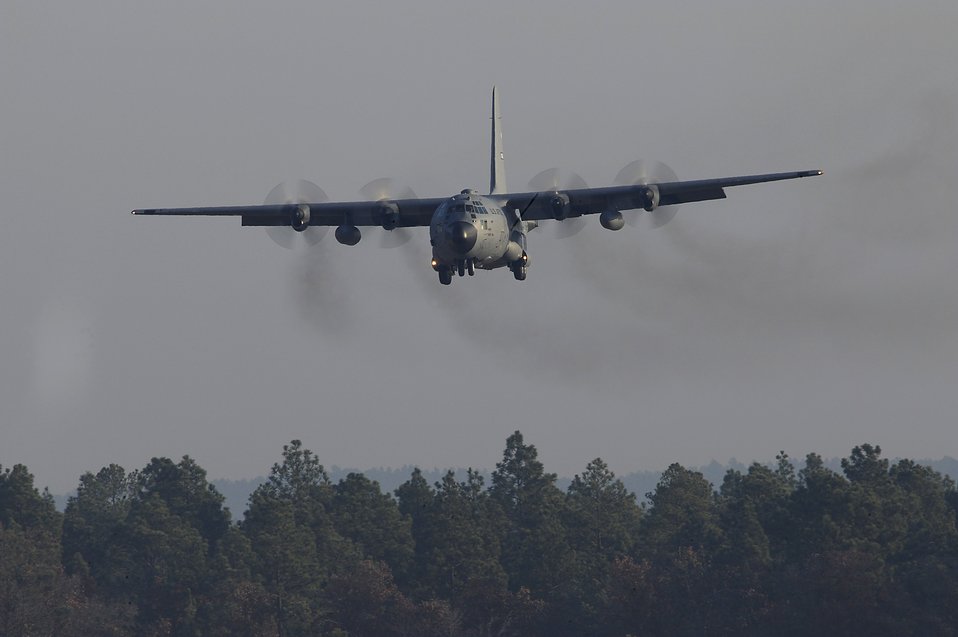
Operation Toy Drop

A C-130 Hercules from Pope Air Force Base, N.C., prepares to land at Drop Zone Sicily to pick up Army Soldiers from the 82nd Airborne Division at Fort Bragg, N.C., for a parachute jump Dec. 6 during Operation Toy Drop at Fort Bragg. Operation Toy Drop is an annual Airborne jump at Fort Bragg in its 11th year hosted by the Army Civil Affairs and Psychological Operations Command (Airborne), and supported by Fort Bragg's XVIII Airborne Corps and the Air Force Reserve Command's 440th Airlift Wing at Pope AFB that gives Soldiers and Airmen the opportunity to help local families in need over the holidays while boosting morale and incorporating valuable training. More than 3,000 Soldiers donated a toy for a lottery ticket and the chance to jump under a foreign jumpmaster, earning them their foreign jump wings. This year, German and Irish jumpmasters will be issuing the commands from C-130 Hercules aircraft during the operation.